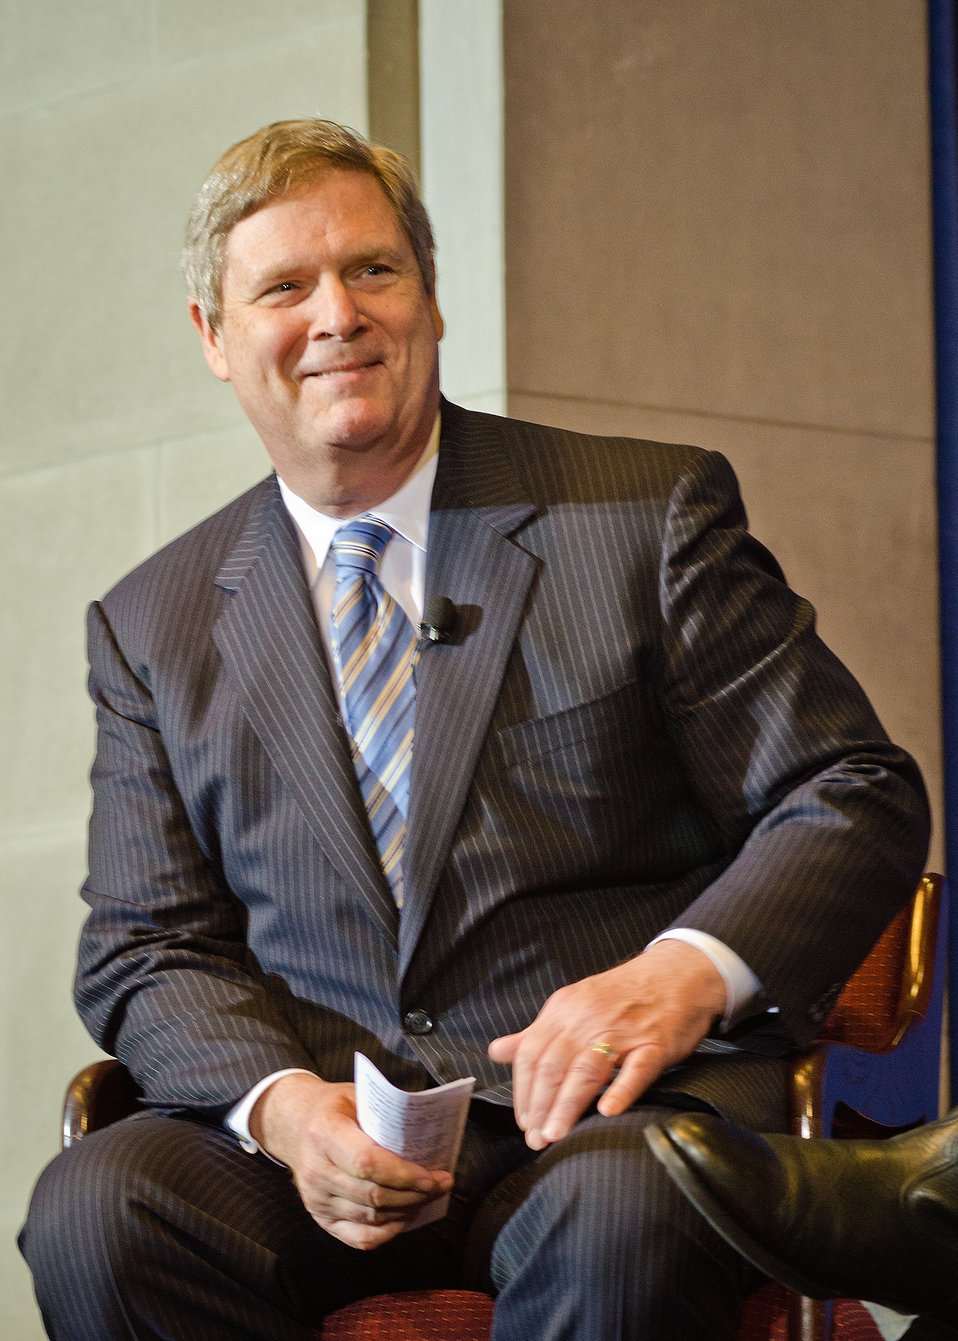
Agriculture Secretary Tom Vilsack was the moderator on the panel “Conserving Rural Lands: New Models for Working Lands and Wildlife” at the White House Conservation Conference, “Growing America’s Outdoor Heritage and Economy” at Interior Department, Yates Auditorium in Washington, D.C., on Friday, March 2, 2012 The conference was part of President Barrack Obama’s, “America’s Great Outdoors Initiative” to spotlight community-driven conservation efforts and discussed how to build their success.